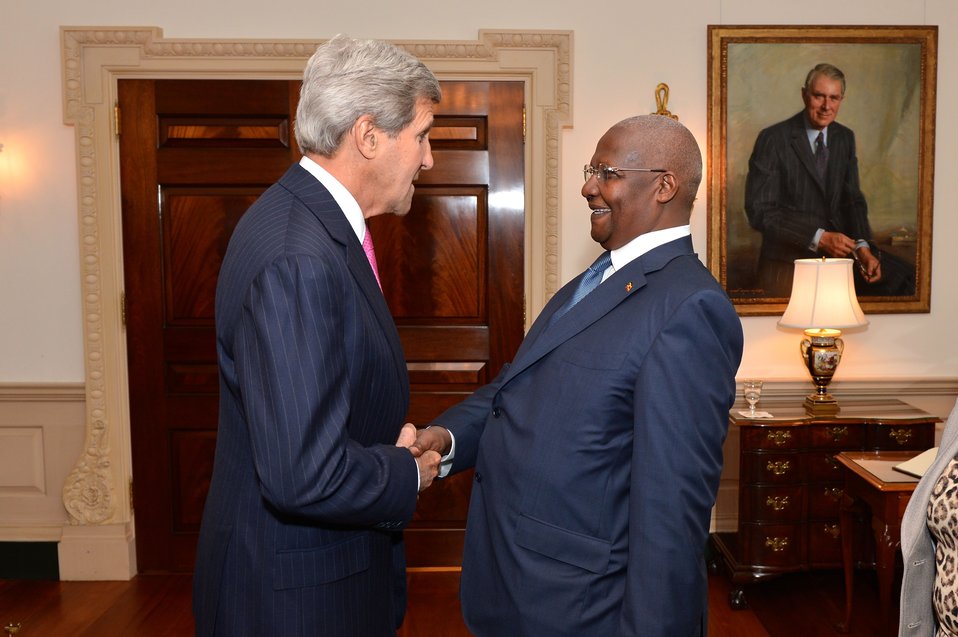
Secretary Kerry Shakes Hands With Ugandan Foreign Minister Kutesa

U.S. Secretary of State John Kerry shakes hands with Ugandan Foreign Minister Sam Kutesa before their bilateral meeting at the U.S. Department of State in Washington, D.C., on June 12, 2014.